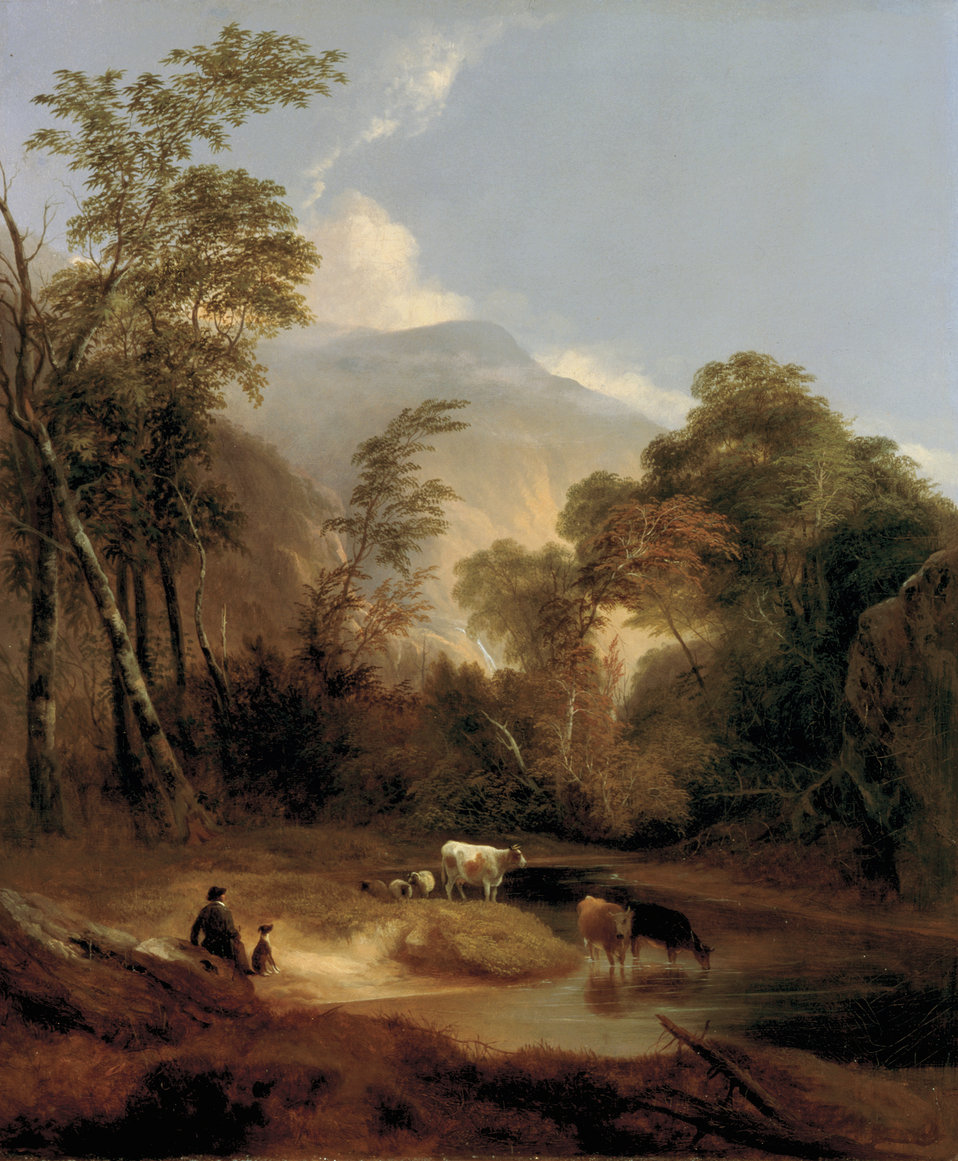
Alvan Fisher - Pastoral Landscape